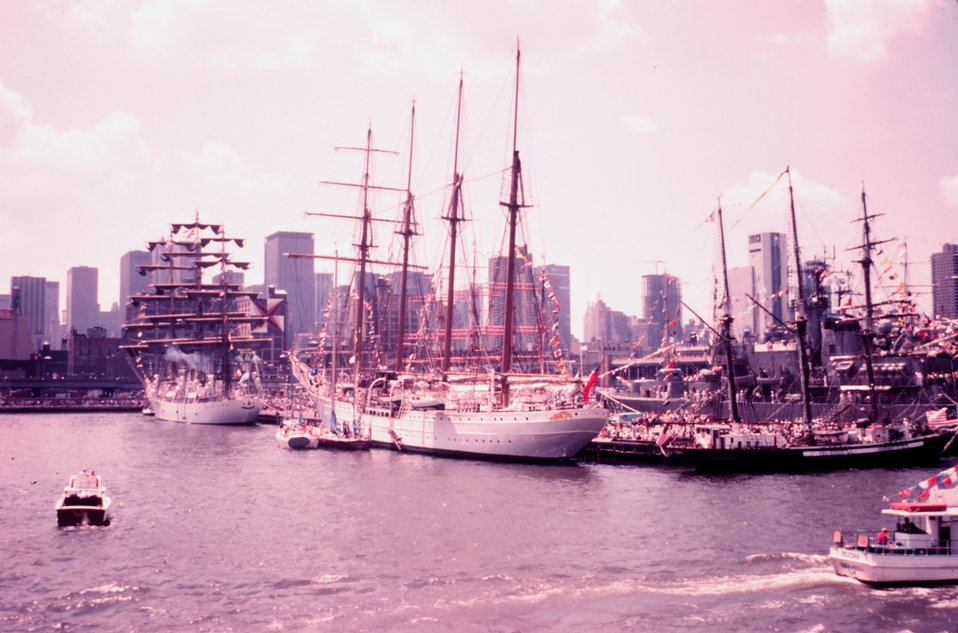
Tall ships tied up in New York Harbor